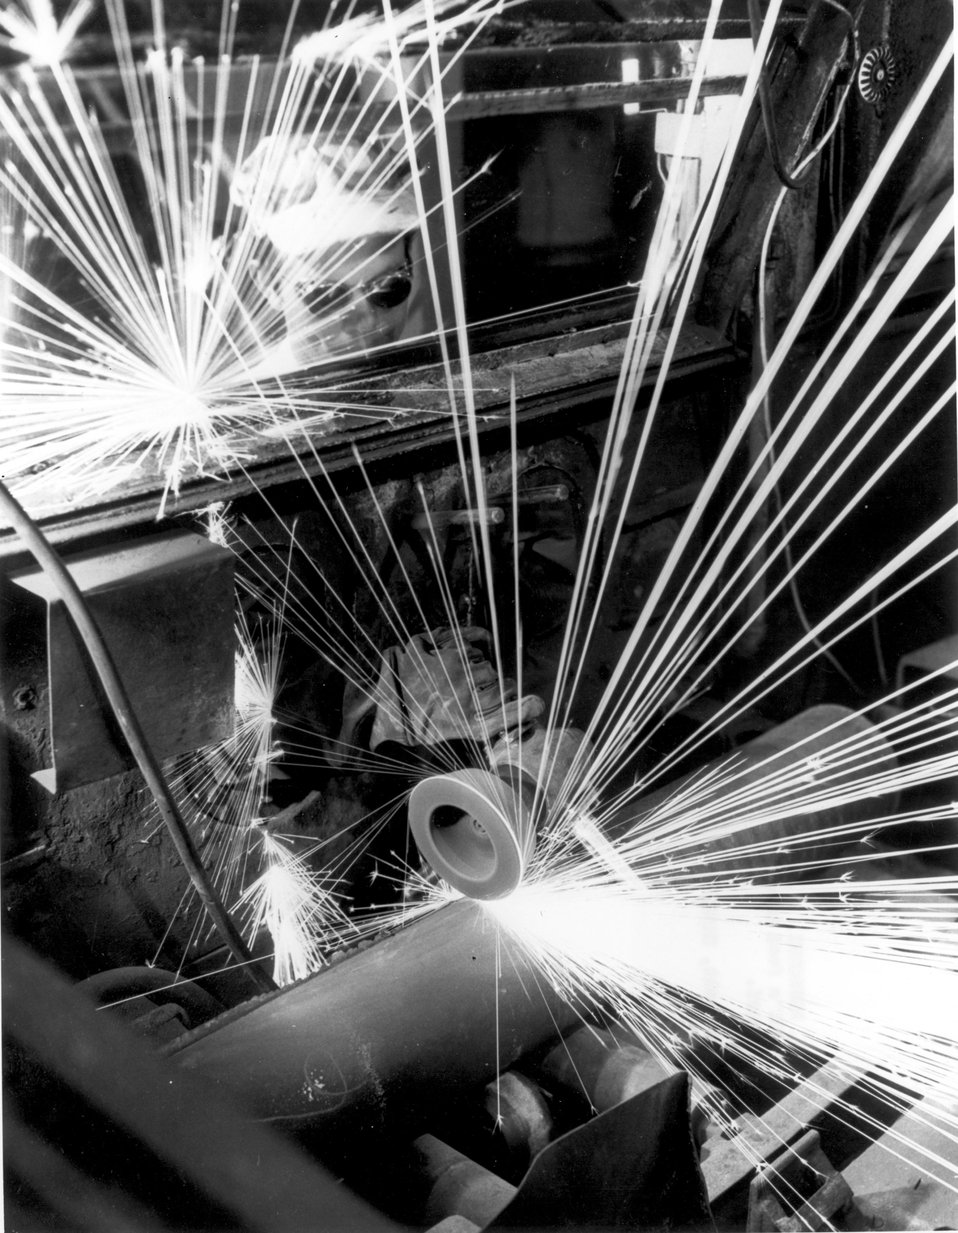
Grinding uranium ingots at the AEC's feed materials plant near St. Louis, Missouri. c. 1961